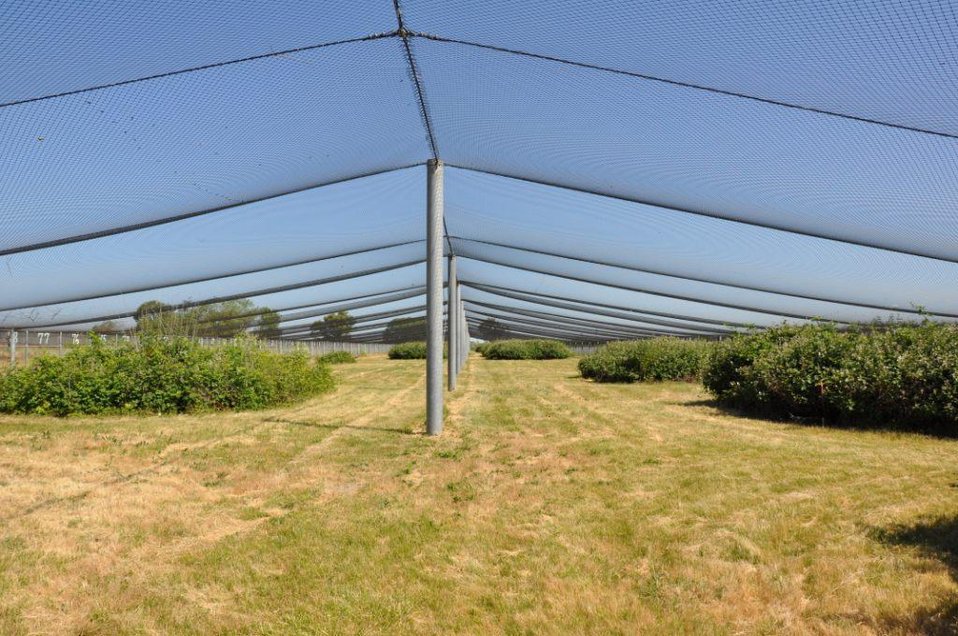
Riparian brush rabbit breeding pens

Located in California's San Joaquin County, Riparian brush rabbits are raised as part of a program to help supplement populations at the San Joaquin National Wildlife Refuge.